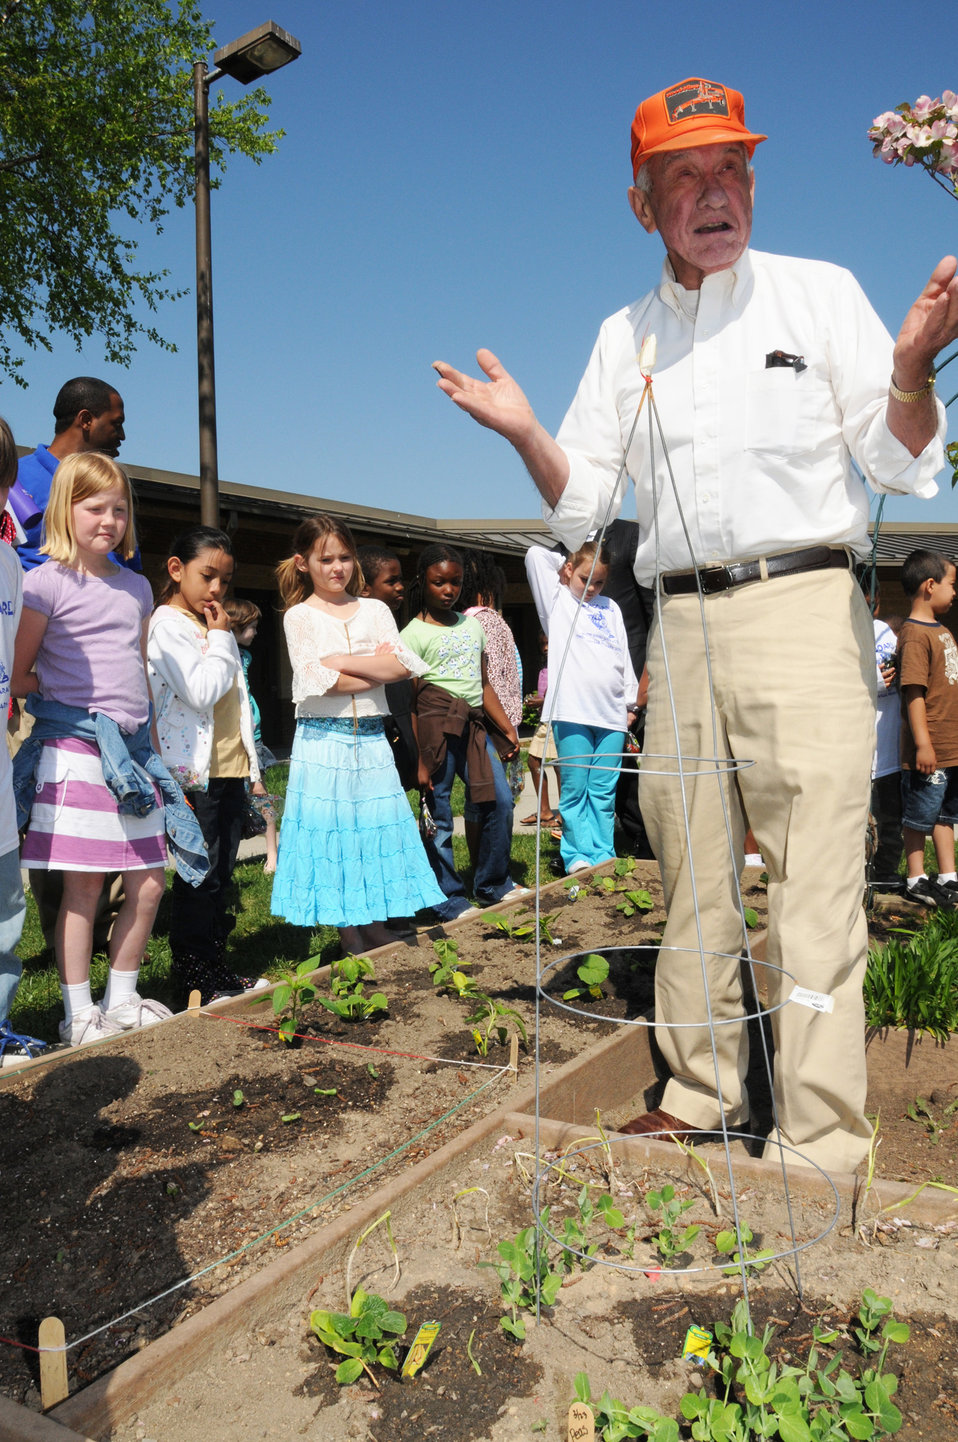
Lets Move - DSC 2137a

Local farmer and County Commissioner Billy Joe Kepley volunteers his time to teach Thomasville Primary School students the art of farming in their school’s garden. The school located in Thomasville, NC, is a HealthierUS School Challenge Gold Award winner and also has a Let’s Move program inspired by First Lady Michelle Obama